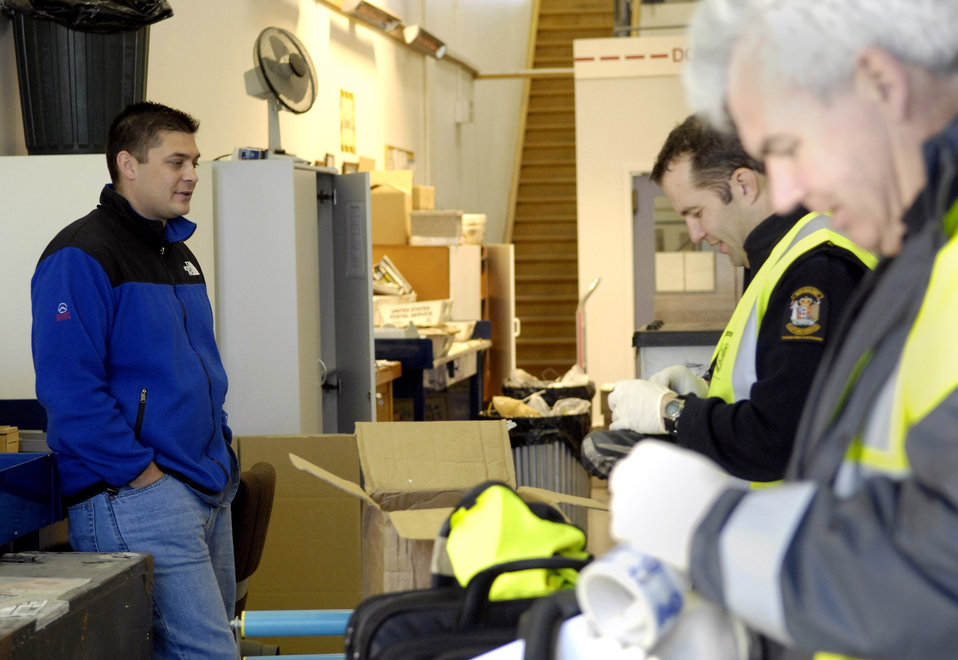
Neither snow nor deep freeze keep mail from Antarctica

Tech. Sgt. Chad Hartley talks with New Zealand customs officials as they spot check mail for Operation Deep Freeze members Aug. 23 at Christchurch, New Zealand. Members of Det. 4, Pacific Air Forces Air Postal Squadron process all mail coming in and out of Antarctica and can handle up to 240,000 pounds of mail during Operation Deep Freeze. Sergeant Hartley is the incoming postmaster for Det. 4.